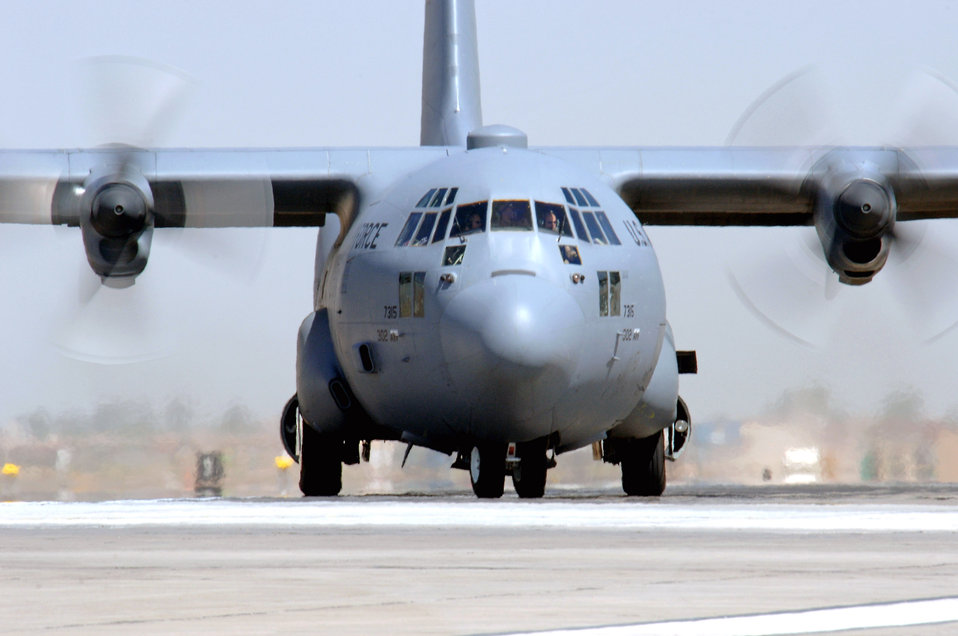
April 29 airpower summary: C-130s help sustain operations

A C-130 Hercules taxis at Balad Air Base, Iraq, after an Operation Iraqi Freedom mission. The C-130 provides intra-theater heavy airlift throughout Southwest Asia. The C-130 is deployed from the Colorado Air National Guard's 439th Airlift Wing in Colorado Springs.